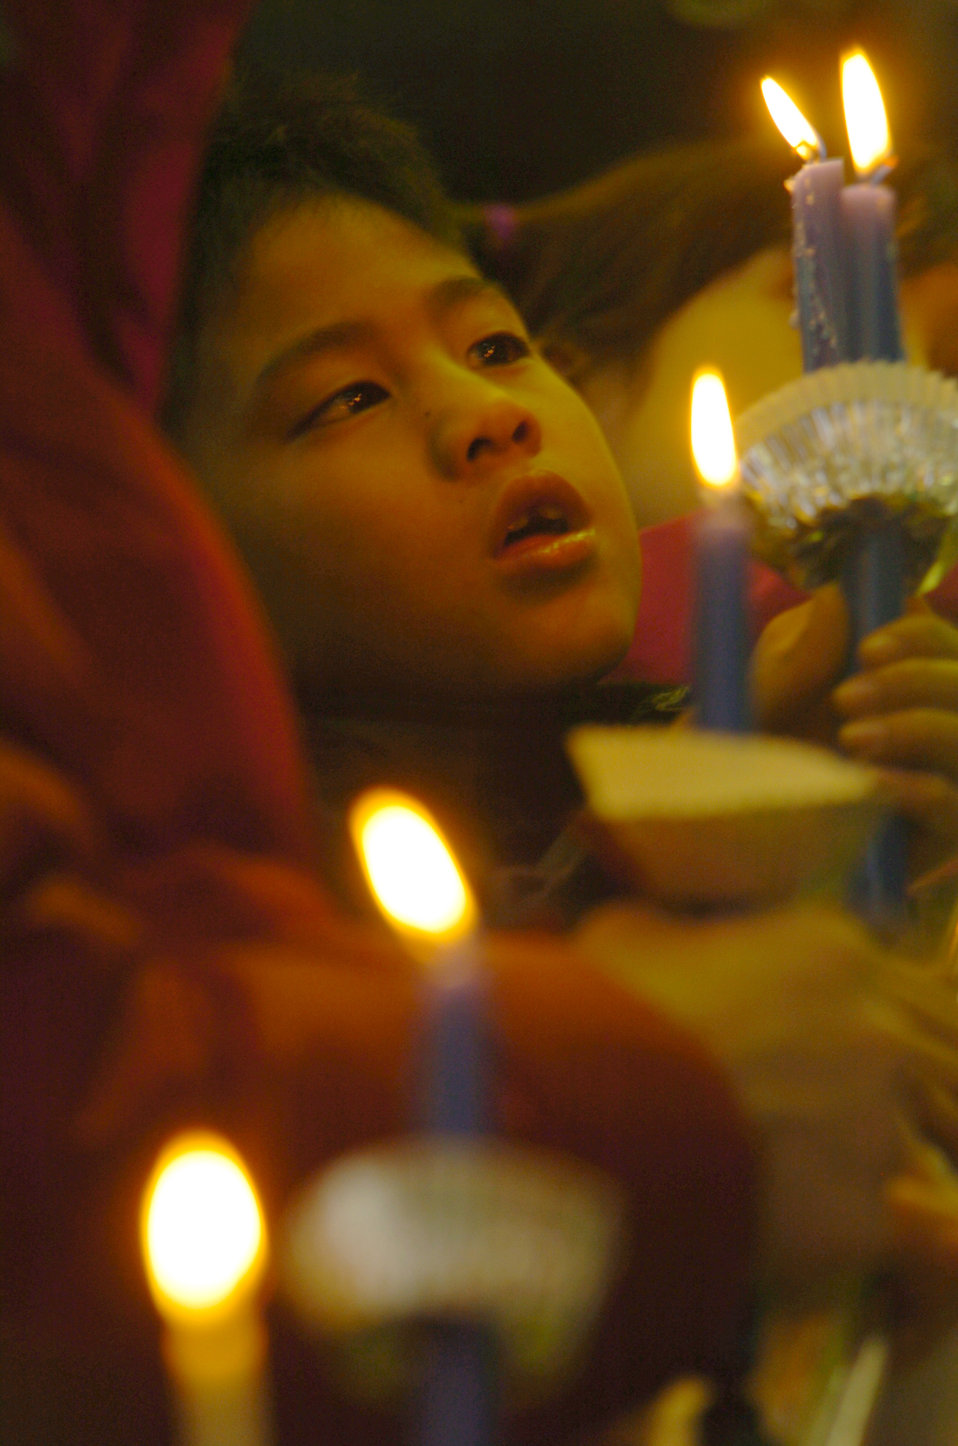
Candlelight vigil

YOKOTA AIR BASE, Japan -- A young boy gazes at his candles during a candlelight vigil here Feb. 11 for deployed troops. About 200 people, including base officials, paid tribute to American forces participating in various deployments worldwide. The ceremony included songs and prayers for the troops.